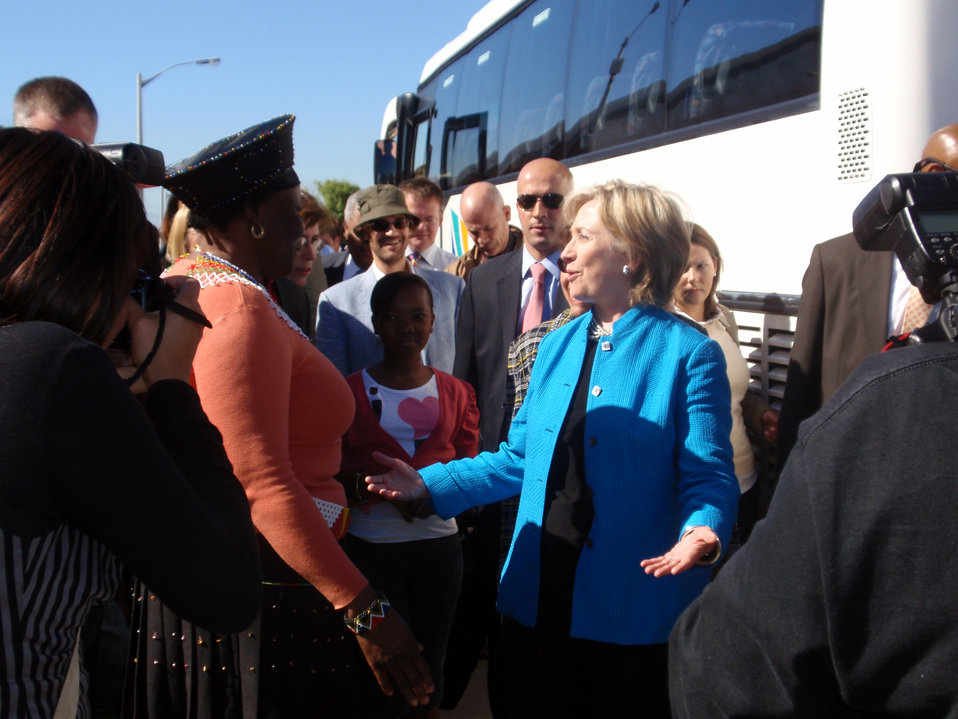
Behind the Scenes: Secretary Clinton Visits Victoria Mxenge Housing Development

U.S. Secretary of State Hillary Rodham Clinton and Patricia Matolengwe at the Victoria Mxenge Housing Development in Cape Town, South Africa August 8, 2009.